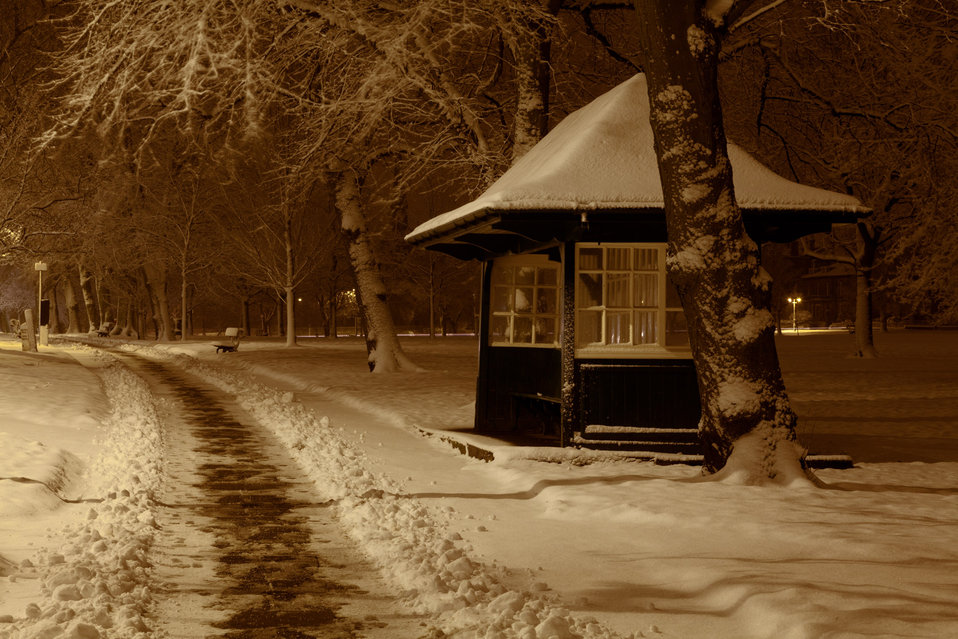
Shed in park at night in winter

A wooden shed in park at night in winter.